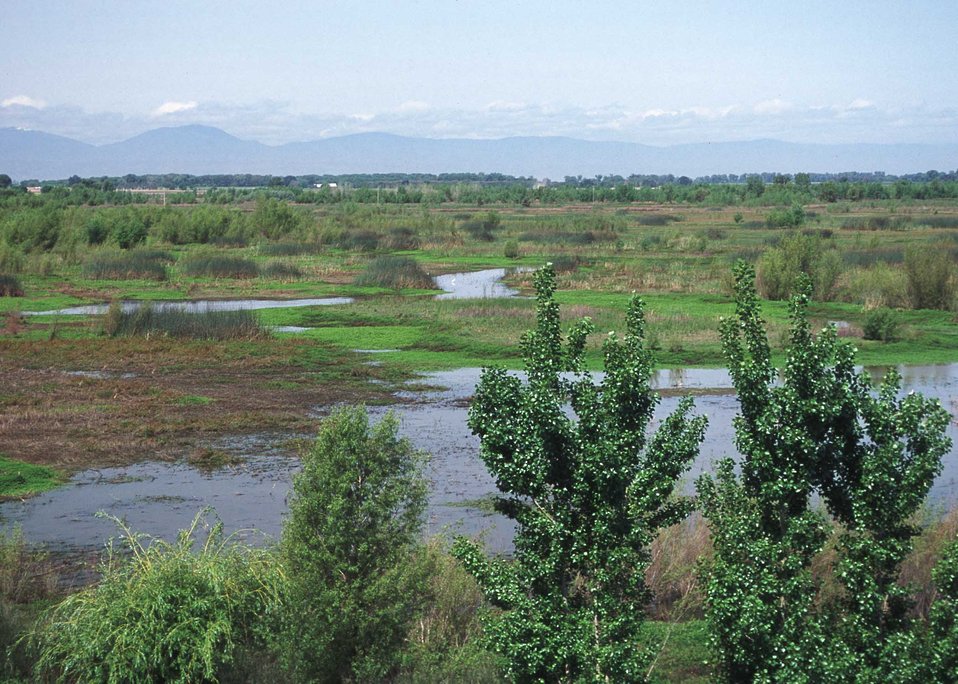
Wetlands in Butte County, CA.